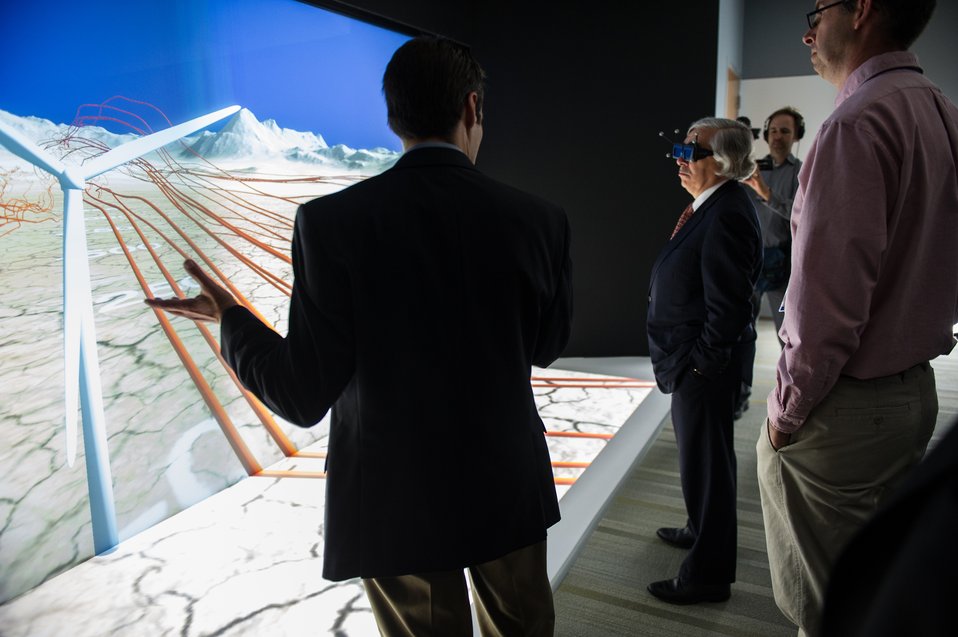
NREL SCIENTIST KENNY GRUCHALLA, LEFT EXPLAINS A WIND TURBINE MODEL AT THE INSIGHT LAB TO ENERGY SECRETARY ERNEST MONIZ DURING A TOUR FOR THE DEDICATION OF THE ENERGY SYSTEMS INTEGRATION FACILITY (ESIF).